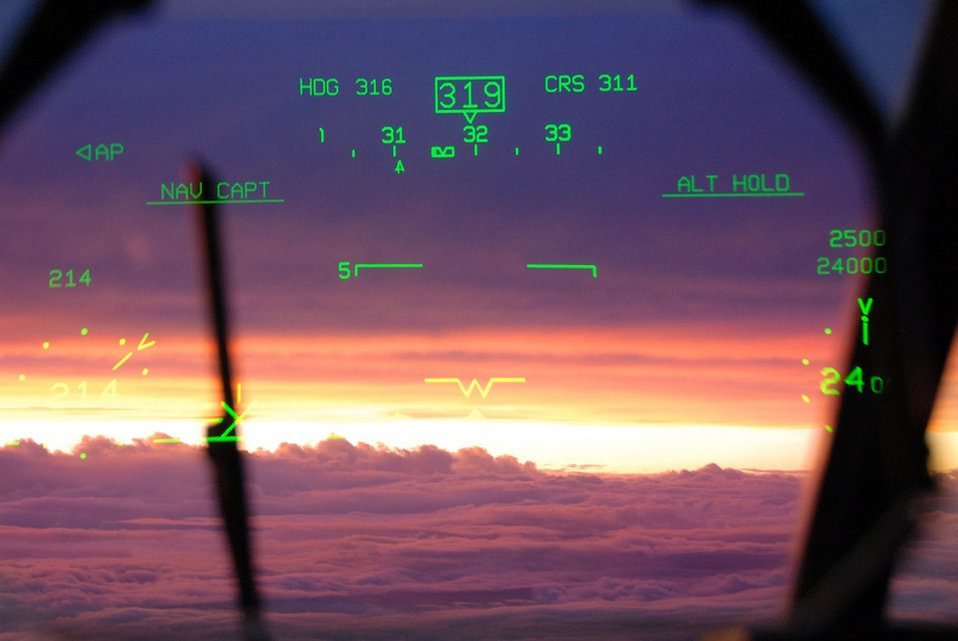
Hurricane Hunters fly nonstop into Ike

A pilot's view of sunset through the heads-up display after flying into Hurricane Ike Sept. 10 over the Gulf of Mexico. The Air Force Reserve Hurricane Hunters of the 403rd Wing at Keesler Air Force Base, Miss, fly 24-hours-a-day, collecting data inside the heart of Hurricane Ike. The data collected by the Hurricane Hunters improve the National Hurricane Center forecast by 30 percent.